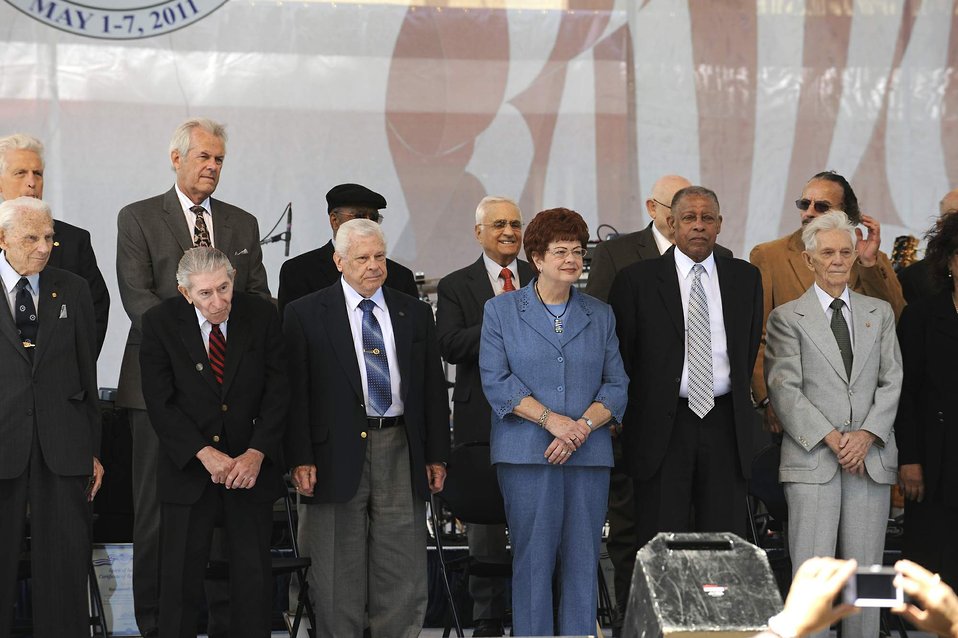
Spirit of Service Award

Joe Lineberger and Sara Brown (center, front row) stand during a ceremony May 5, 2011, in the Pentagon courtyard, honoring them for 50 years of public service. Mr. Lineberger is a senior executive for the assistant secretary of the Air Force for manpower and reserve affairs, while Ms. Brown works for Air Force Materiel Command. There were about 50 Department of Defense civilians honored during the ceremony, some with more than 60 years of service.